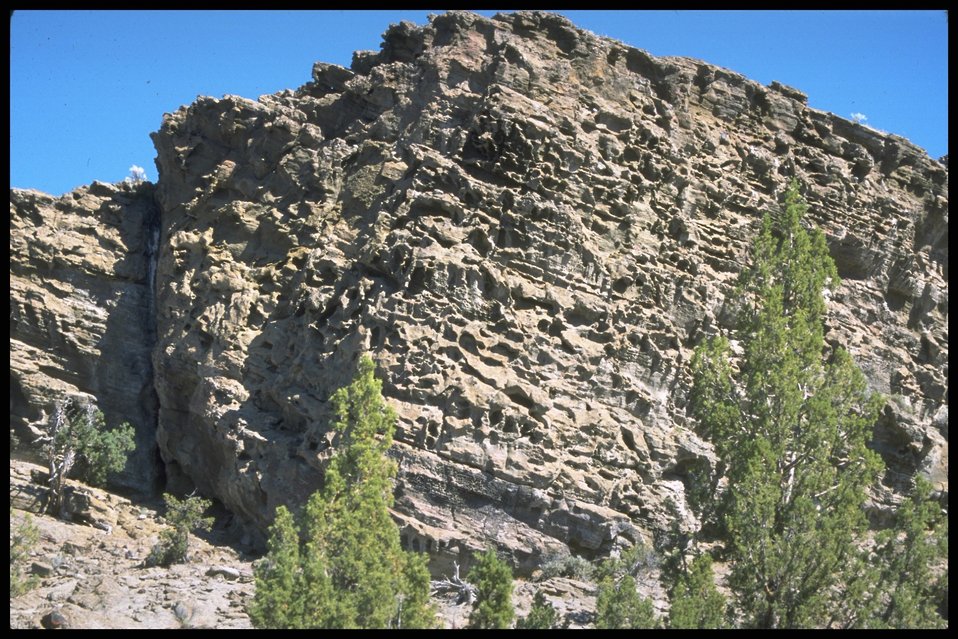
Scenic view of Sand Rock, Lost Forest. Lakeview District.